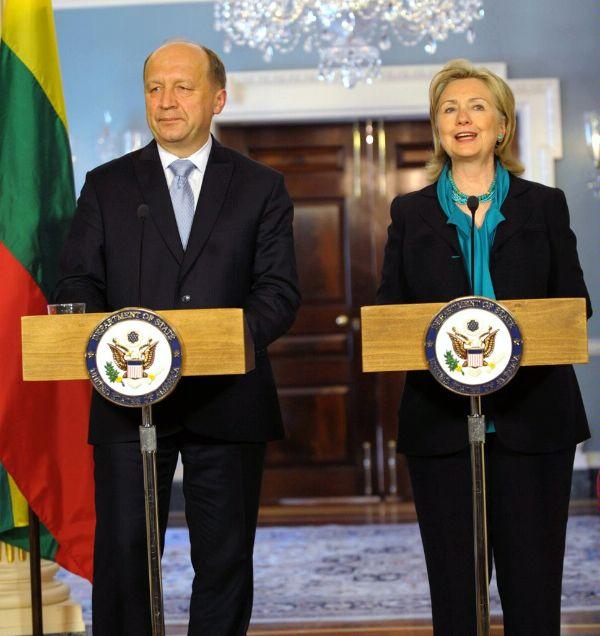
Secretary Clinton Shakes With Lithuanian Prime Minister Kubilius

U.S. Secretary of State Hillary Rodham Clinton appears with Lithuanian Prime Minister Kubilius during a press availability after their bilateral meeting in the Treaty Room at the U.S. Department of State, Washington, DC, May 6, 2010.